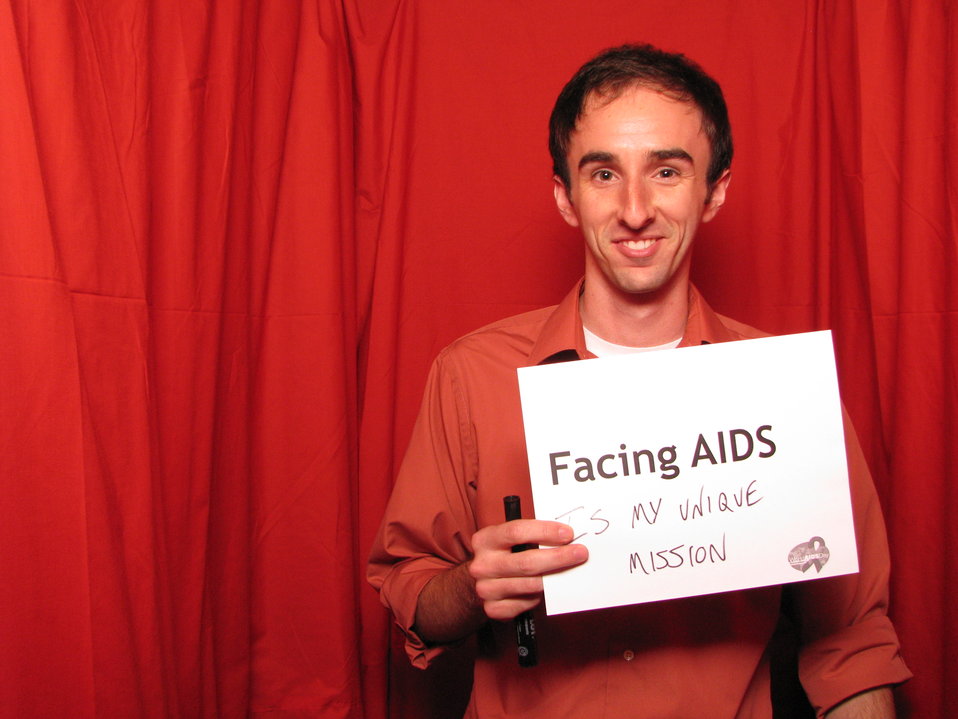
FACING AIDS is my unique mission.

From the AIDS.gov photo booth at the U.S. Conference on AIDS, September 2010 (Orlando, FL).